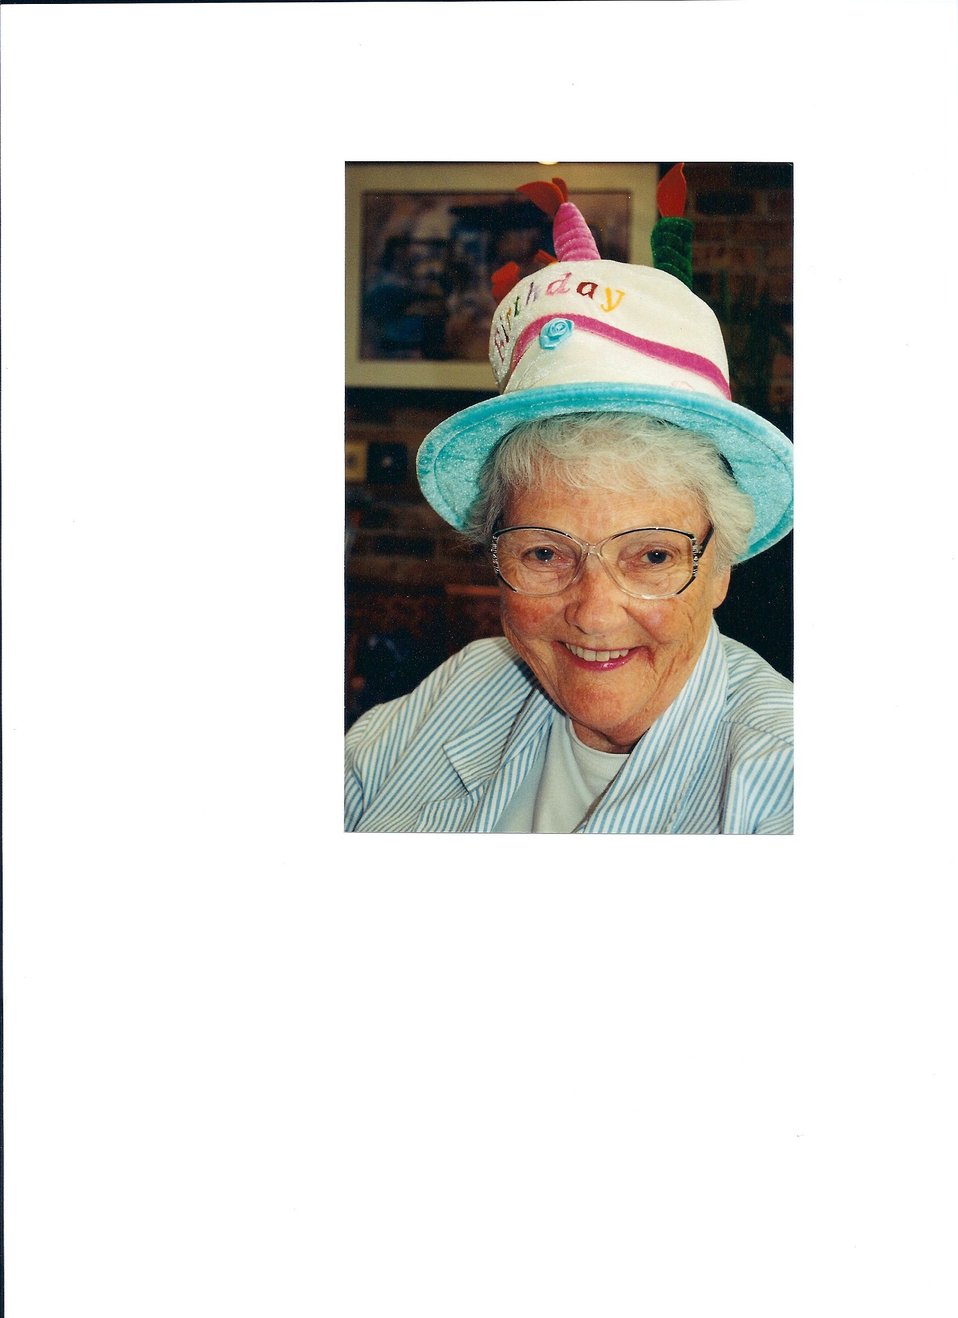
Margaret Griess

Jane Griess's mom, the late Margaret Griess